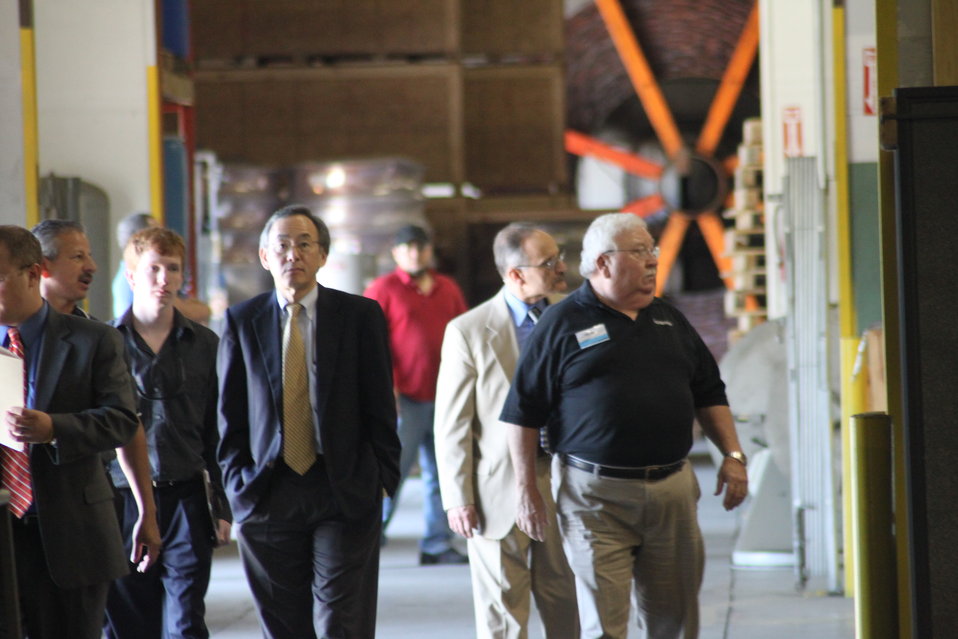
Norm 036